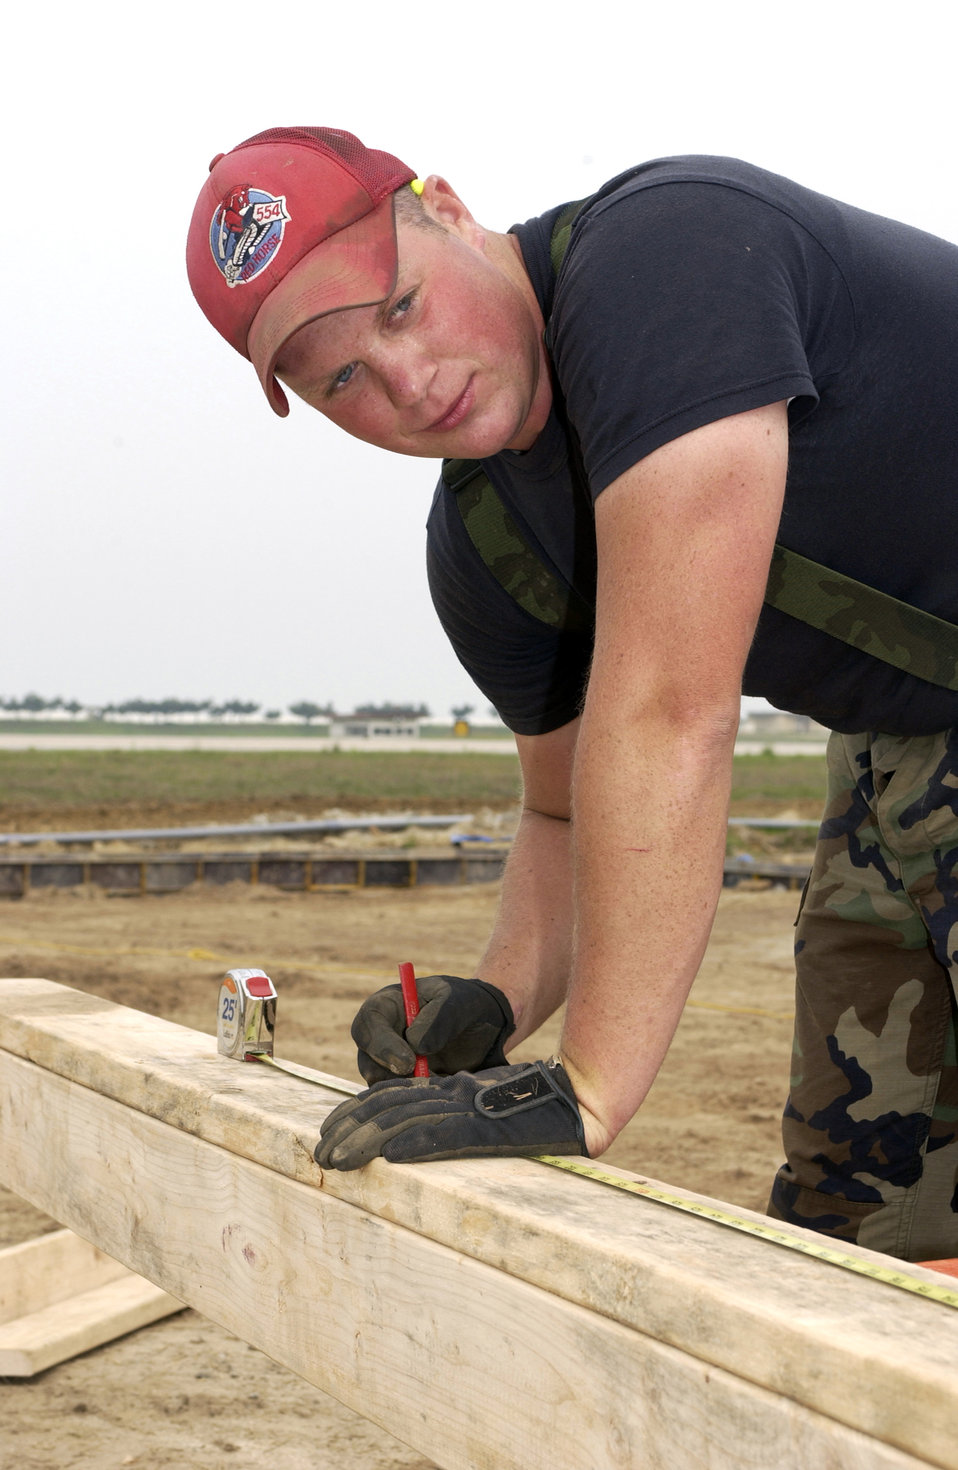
Red Horse squadrons unite in the fight

Senior Airman Daniel Hayes measures a piece of wood for construction on an arresting barrier at Kunsan Air Base, South Korea, on Thursday, May 18, 2006. The barrier helps stop aircraft making emergency landings. Airmen from Red Horse squadrons at Nellis Air Force Base, Nev.; Barksdale AFB, La.; Andersen AFB, Guam, and Osan AB, South Korea, are working through September on various quality-of-life improvement projects in South Korea. Airman Hayes is with Osan's 554th Red Horse Squadron.